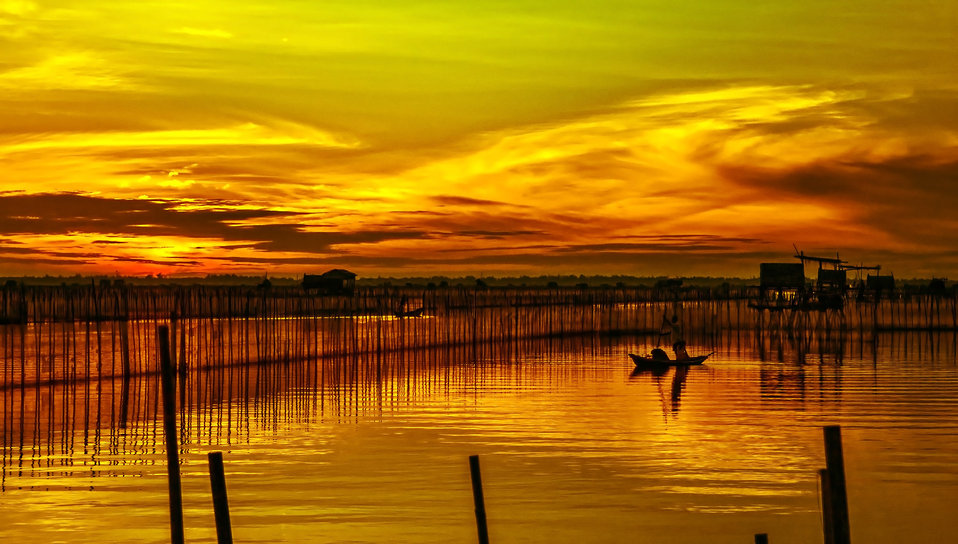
Sunrise

Dawn in the lagoon, hue province, vietnam..